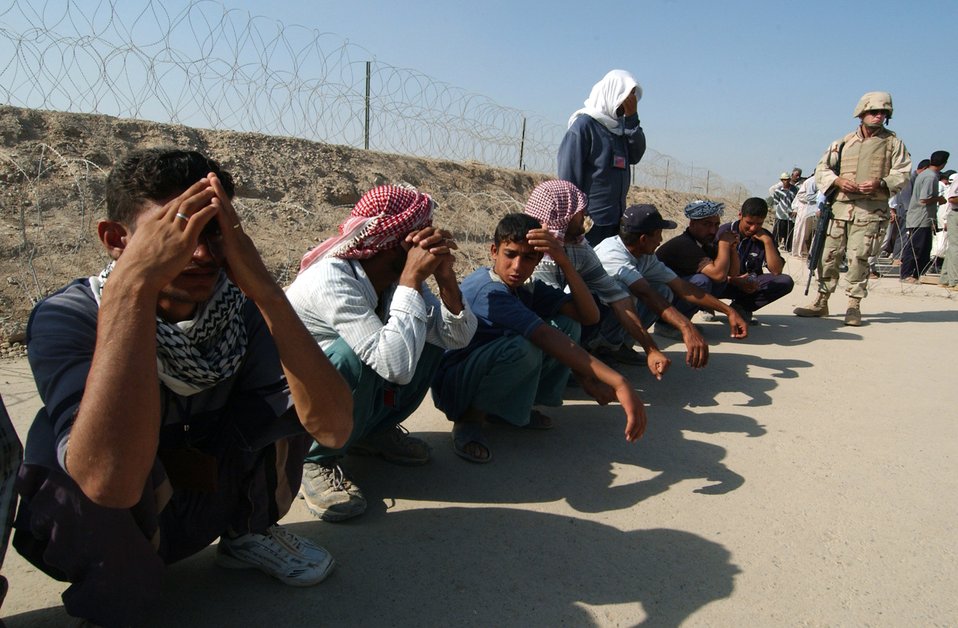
Escorts keep watch over foreign workers

BALAD AIR BASE, Iraq -- Senior Airman Dana Kelly watches over workers as they wait to go to their job sites Oct. 4. Airman Kelly is a security escort with the 332nd Expeditionary Civil Engineer Squadron here and is deployed from Eglin Air Force Base, Fla.